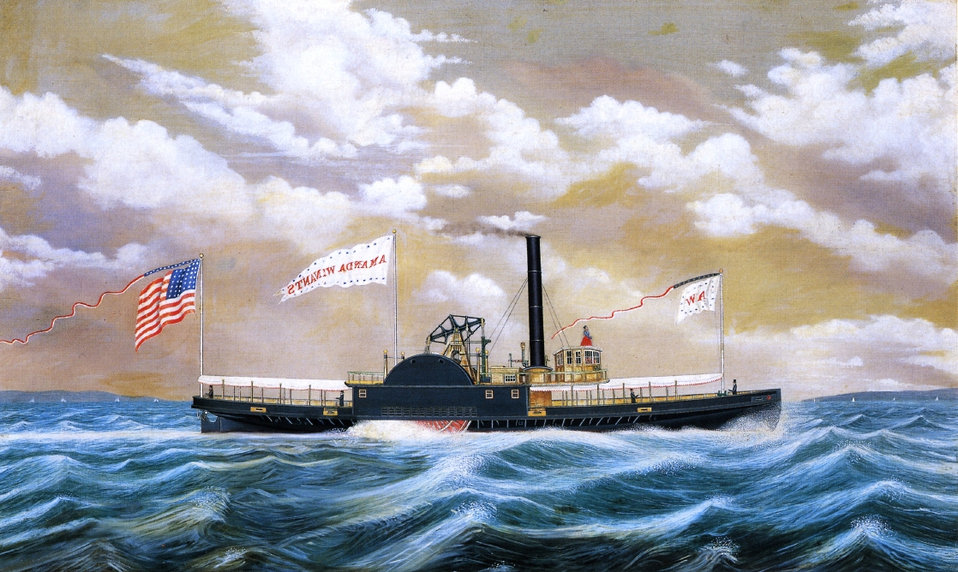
Amanda Winants